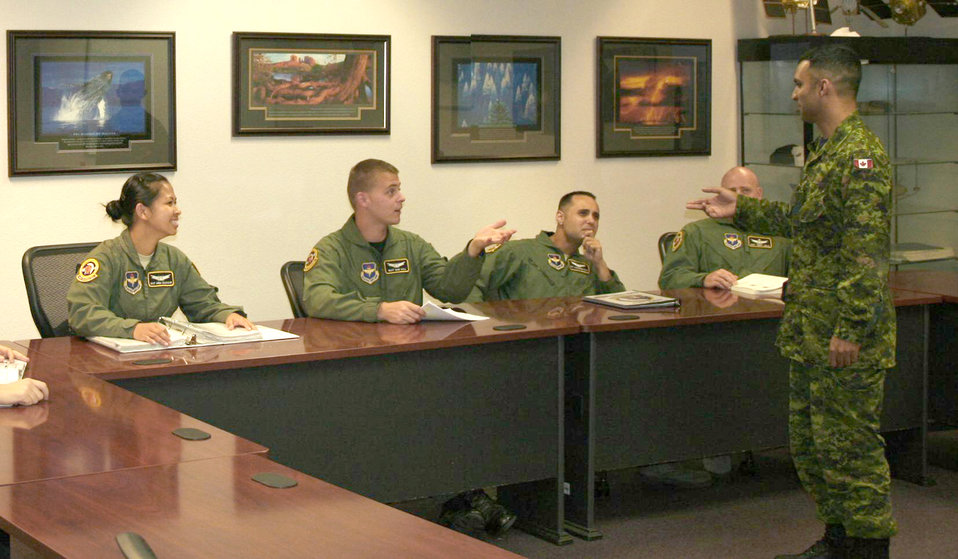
Canadian forces contribute

Canadian air force Sergeant David Panth teaches a class at the 533rd Training Squadron at Vandenberg Air Force Base, Calif. Canadians have been a part of the North American Aerospace Defense Command from its beginning, and seven Canadians currently fill various positions at Vandenberg AFB.